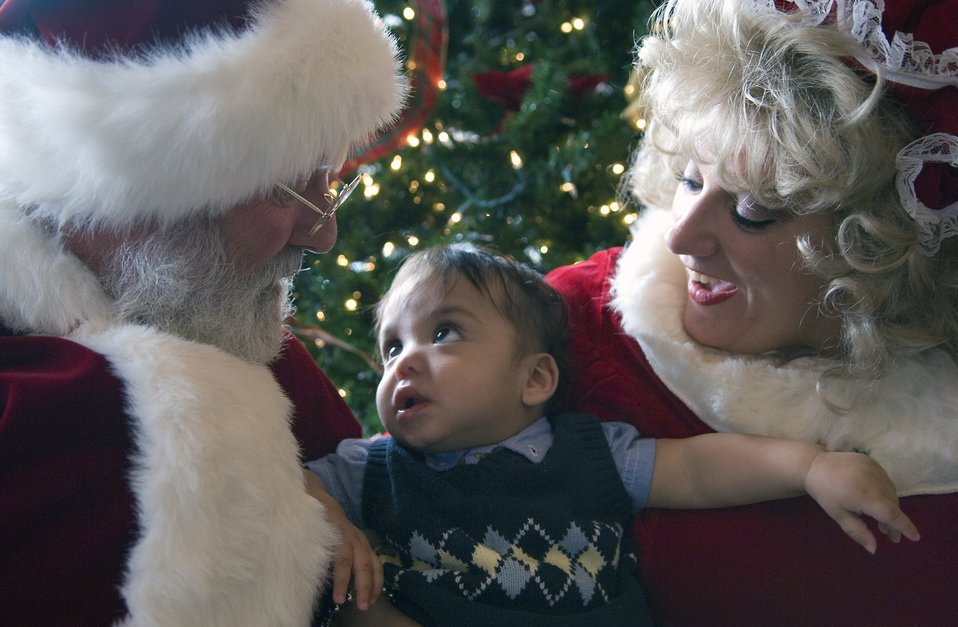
Santa brings holiday cheer to Arnold party

Six-month-old Xavier Kinslow looks up in amazement at Santa Claus during the Christmas party Dec. 2 at Arnold Air Force Base, Tenn.